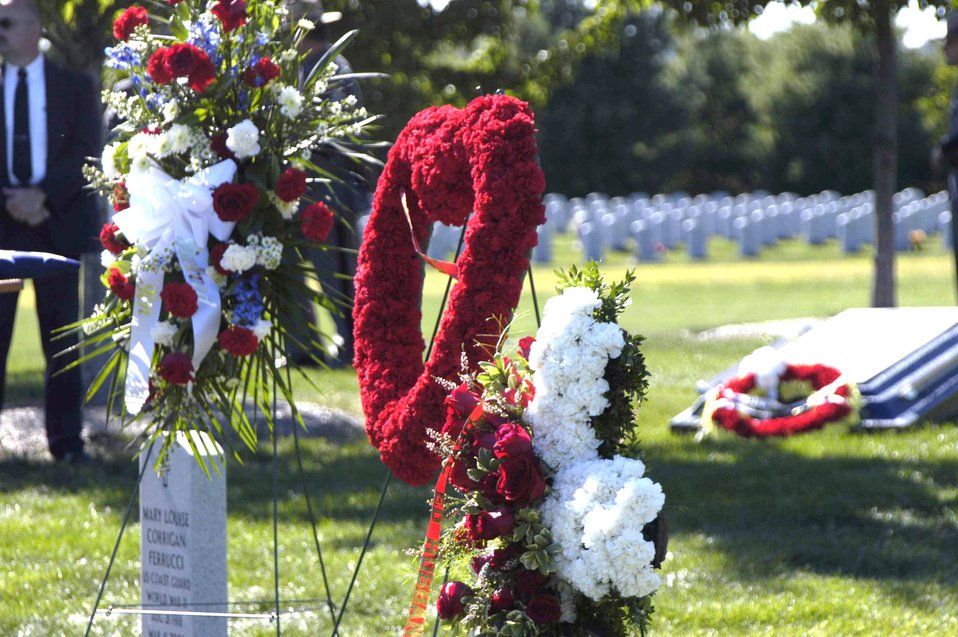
Airmen pay tribute to fallen guardsman

More than 100 Airmen from the New York Air National Guard's 109th Airlift Wing attended the funeral of Master Sgt. Joseph Longobardo Sept. 11. Sergeant Longobardo, a guardsman with the 109th Security Forces Squadron, was a New York State Police officer who was killed in the line of duty Sept. 3 while participating in the manhunt for fugitive Ralph